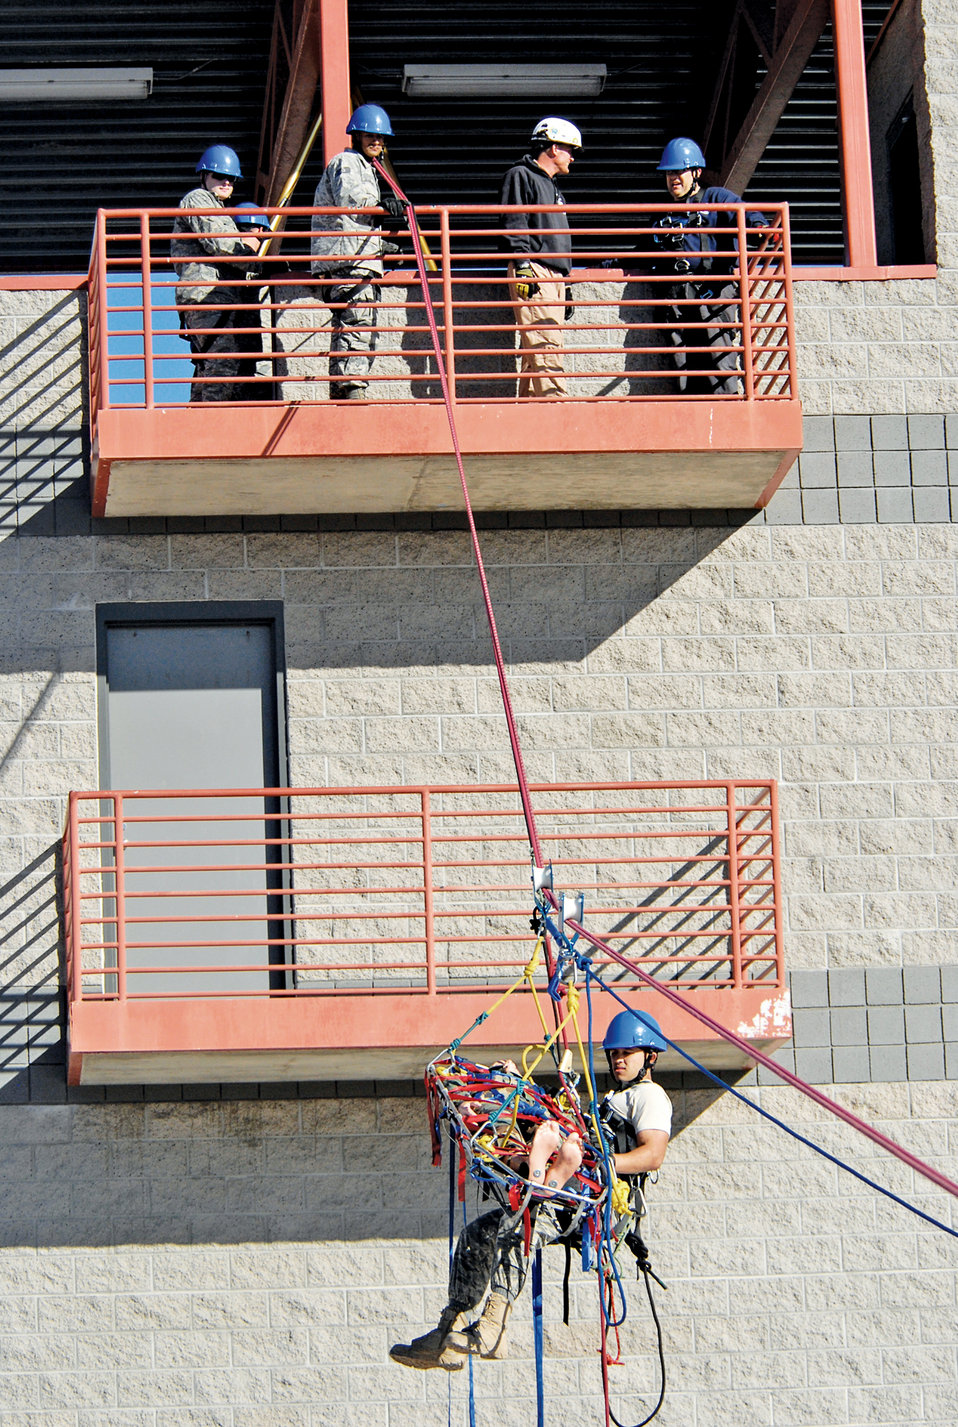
Heroes in training

Airmen perform a high-line rescue operation Jan. 20, 2011, at the Glendale Regional Public Safety Training Center in Glendale, Ariz., as part of a rescue-technician training course.